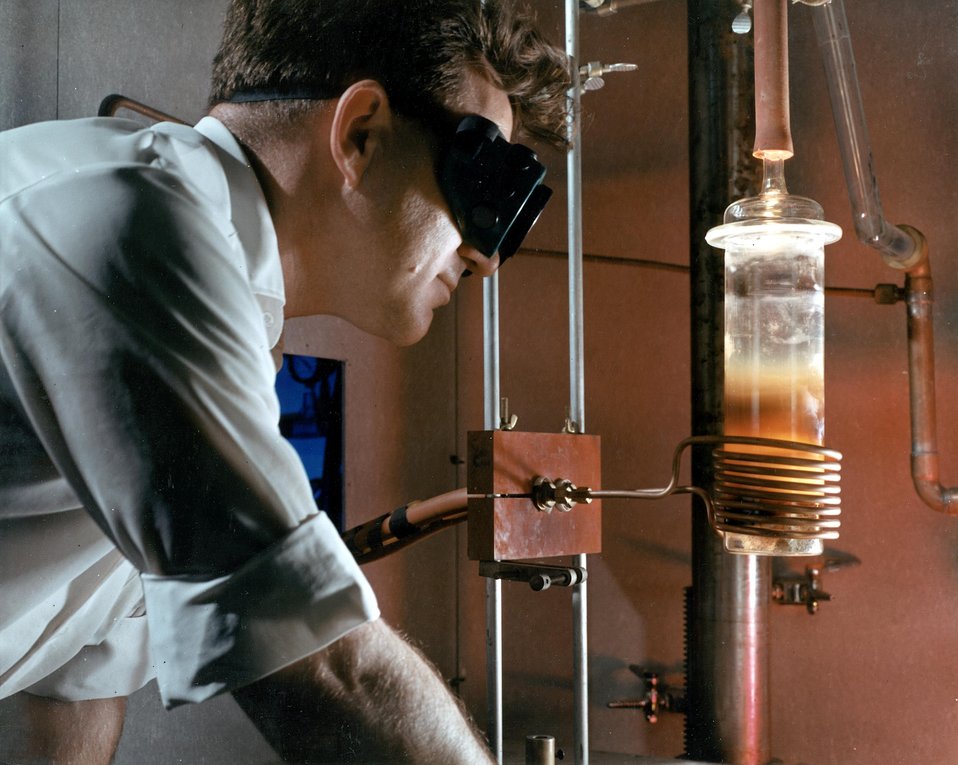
Purification of refractory metals is a vacuum at high temperatures (2000 degrees C), by induction heating using high frequency currents, sometimes called eddy current heating. c. 1967